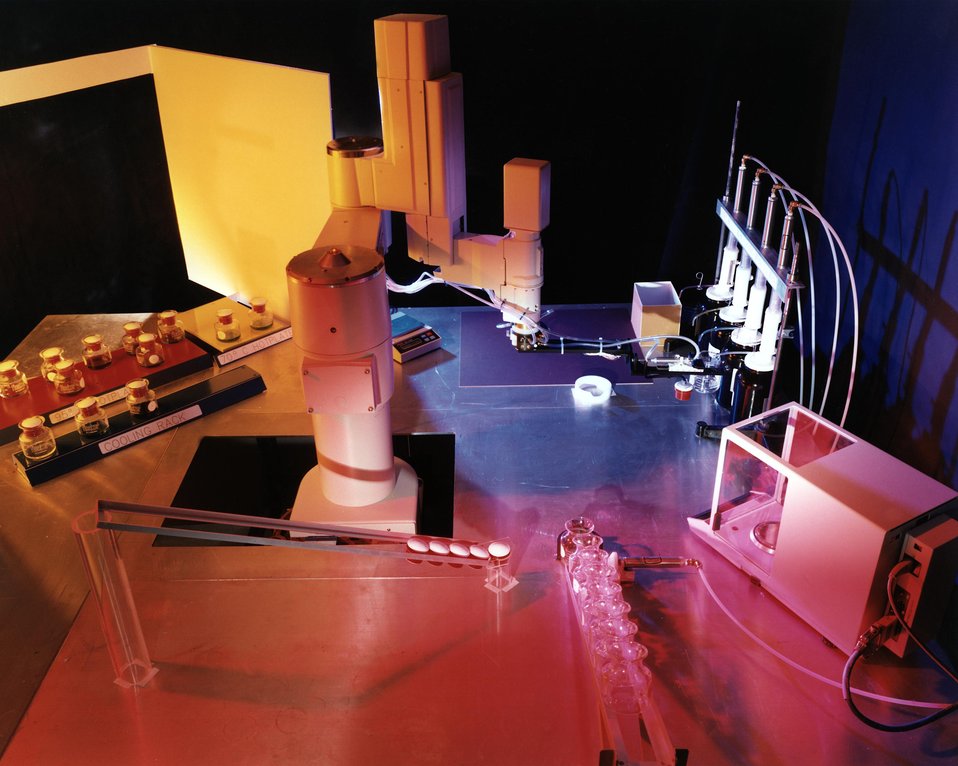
ROBOTIC SYSTEM DEVELOPED FOR CHEMICAL ANALYSIS OF SOIL COMPOSITION.

SCIENTISTS AT PACIFIC NORTHWEST LABORATORY HAVE DEVELOPED A ROBOTIC SYSTEM TO PREPARE POLLUTED SOIL FOR CHEMICAL ANALYSIS. THE ANALYSIS PROCEDURE IS EXTREMELY TEDIOUS AND EXACTING. THE ROBOTIC SYSTEM HAS PROVED TO BE FAR MORE EFFICIENT AND EXACT THAN PREVIOUSLY USED CONVENTIONAL METHODS. THE SYSTEM WILL BE USED AT VARIOUS DOE WASTE CLEAN-UP SITES.